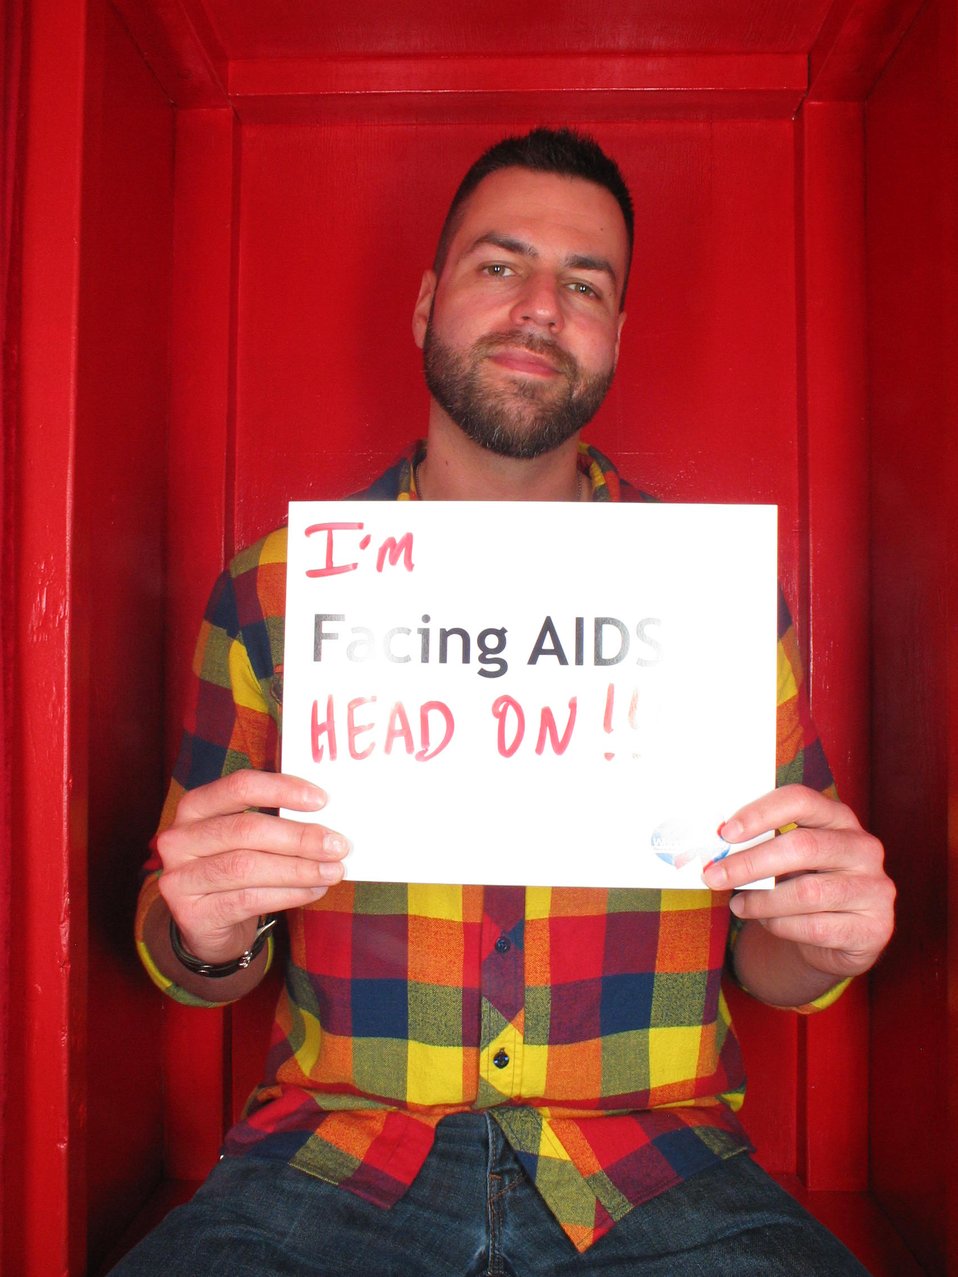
I'm Facing AIDS head on!